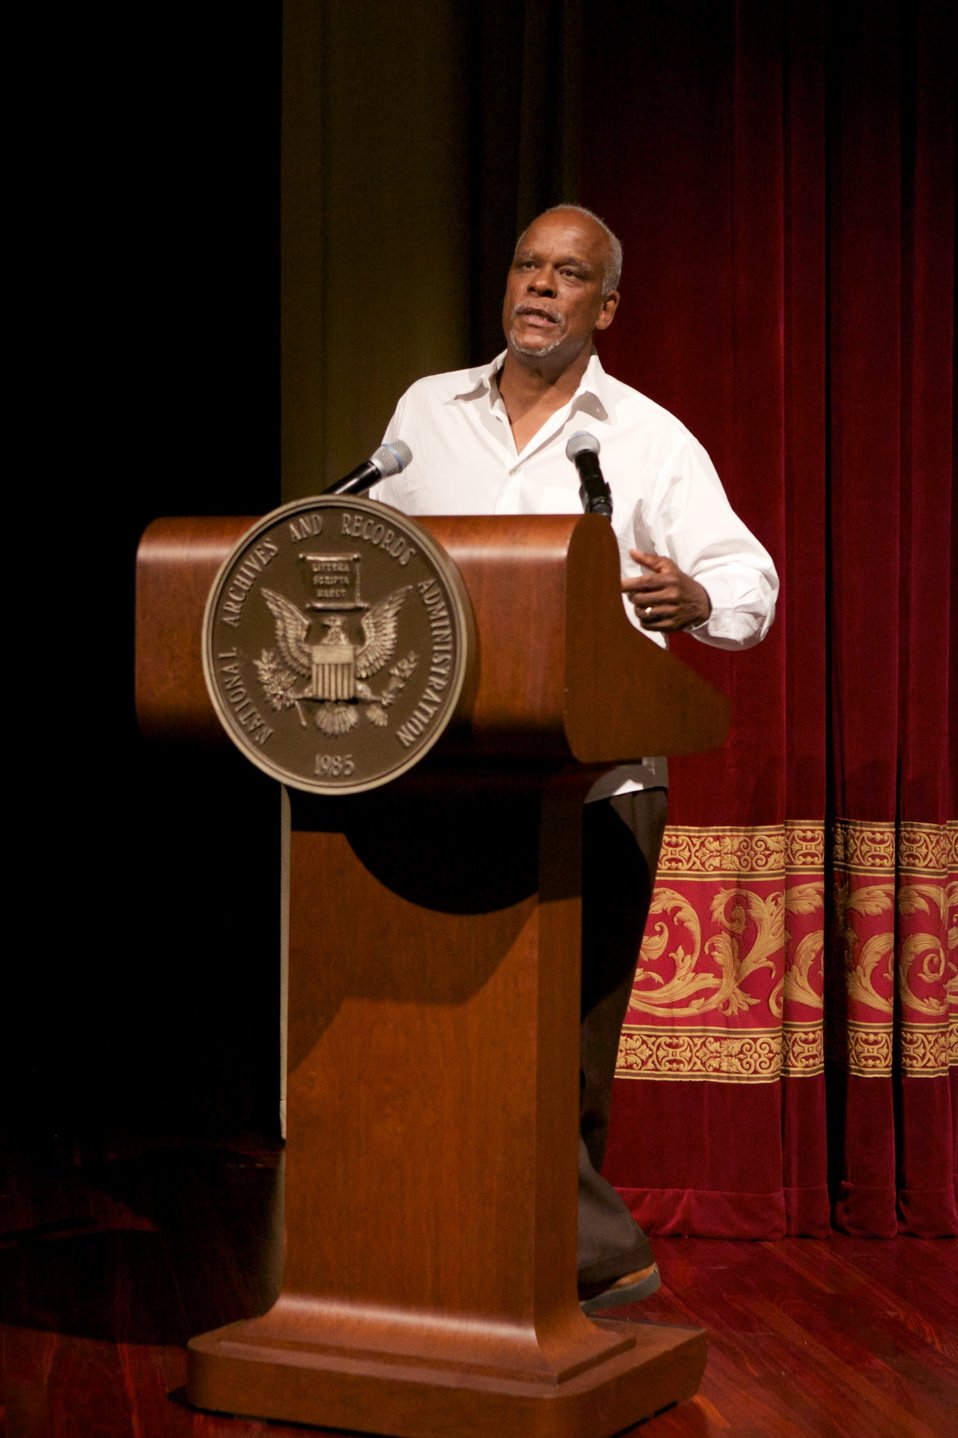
Freedom Summer